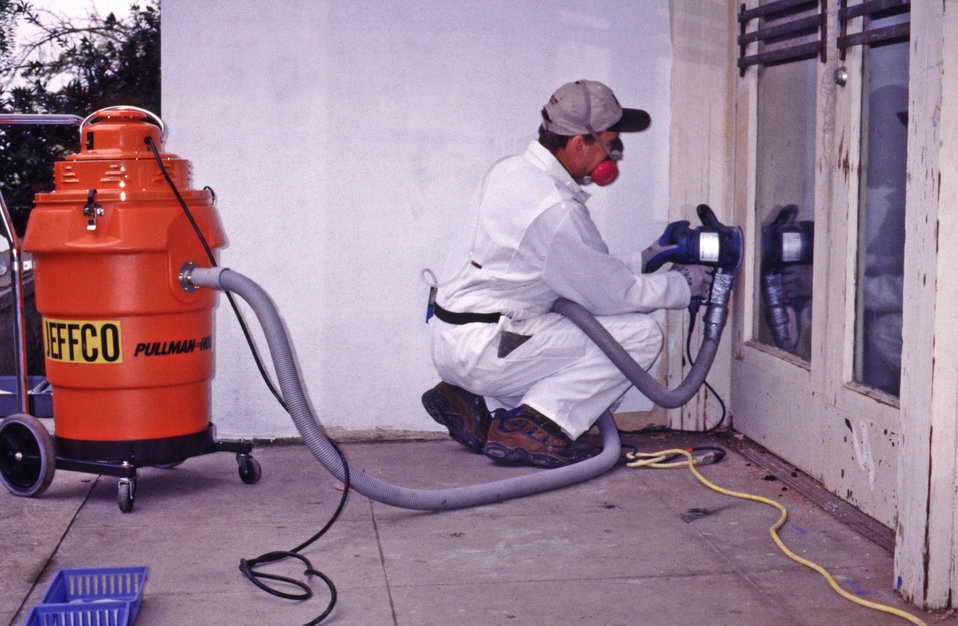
This 1999 photograph shows a worker using a power sander equipped with a high efficiency particulate air filter exhaust system that collected paint particulates to remove paint from a door, demonstrating an exterior renovation method that was used on residences where lead-based paint was present. This was found to be a low-exposure method.